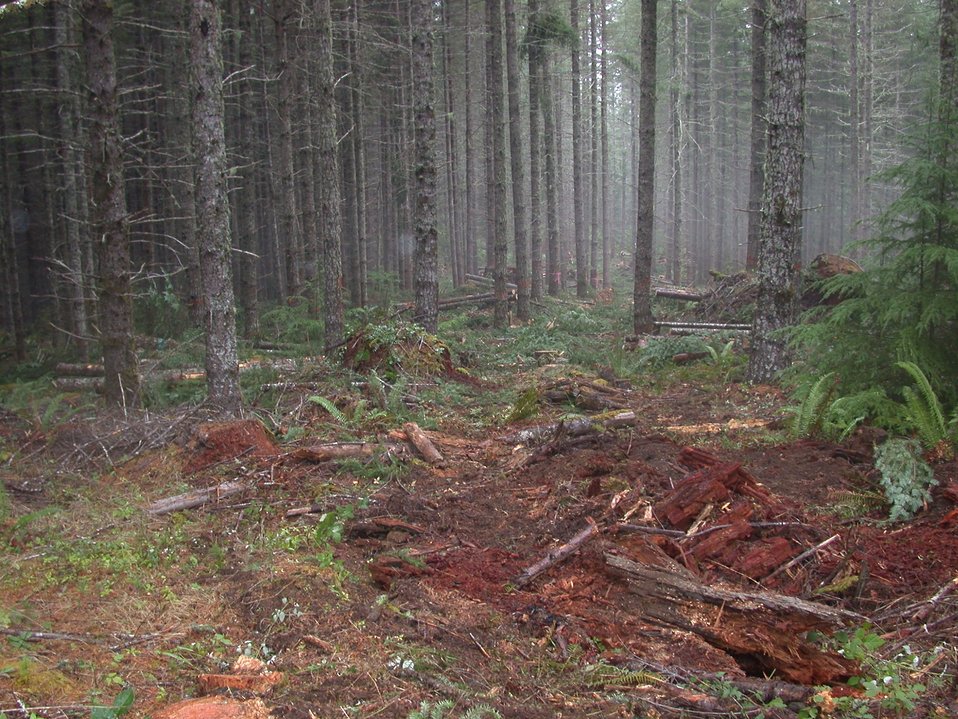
Camas East Timber Sale in Late Successional Reserve. Skid road.